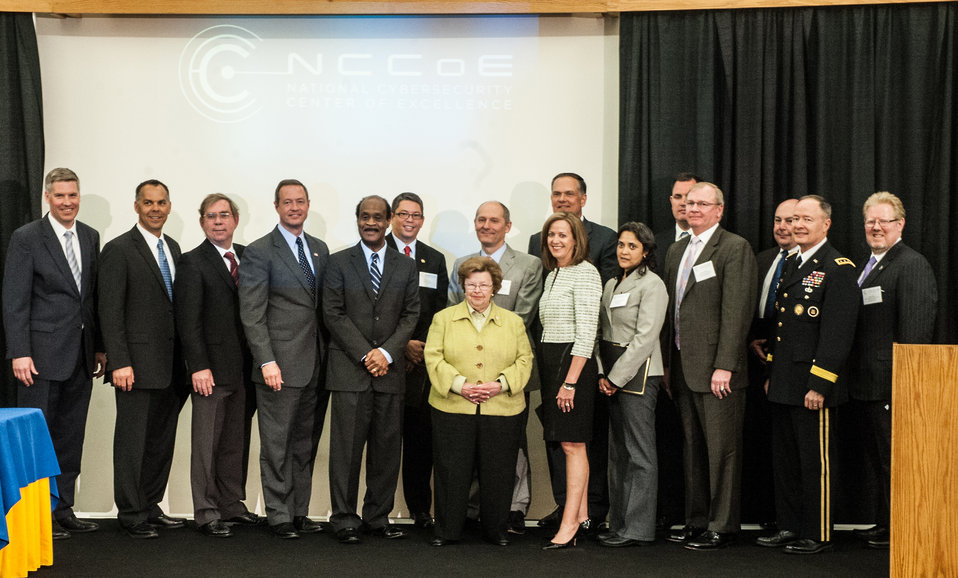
NCCOE Signing

Representatives from 11 companies joined federal and local officials in a partner signing ceremony at the National Cybersecurity Center of Excellence. From L-R: Pat Gallagher (NIST), Brig Lambert (Venafi), John Conners (Vanguard Integrity Professionals), Governor Martin O'Malley (Md.), County Executive Isiah Leggett, Vernon Lee (Microsoft), U.S. Senator Barbara Mikulski (D-Md.)Tom Gann (McAfee), Gigi Schumm (Symantec), Dave Patterson (Intel Federal), Hemma Prafullchandra (HyTrust), Bill Cull (Splunk), Michael Brown (RSA Federal Business), Ned Miller (Hewlett-Packard), Gen. Keith Alexander (NSA), and Gregory Akers (Cisco Systems)